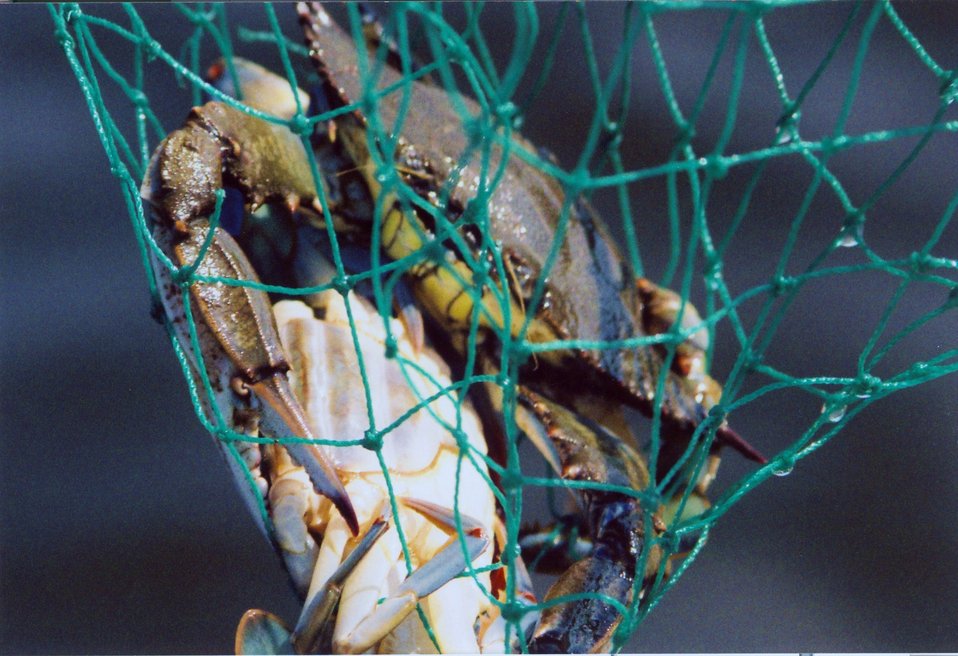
Blue crab doubler in net. The male is above while the female below is most likely a soft-shell crab.